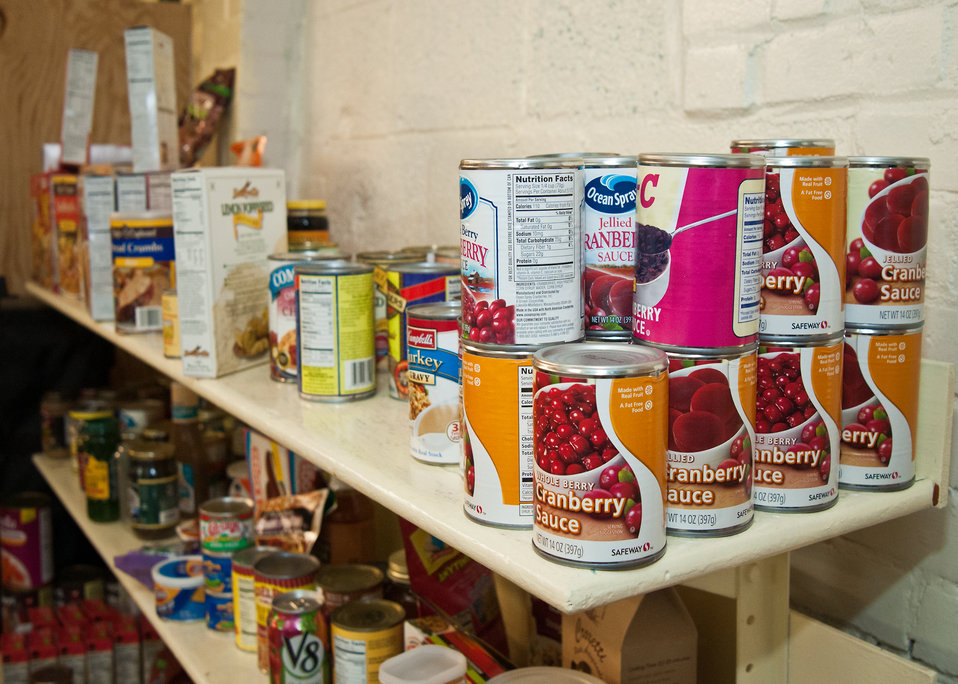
Fifty-five percent of the food distributed at the Arlington Food Assistance Center in Arlington, Virginia is donated food. So far in 2012, The AFAC has served an average of 1,500 families per week. Agriculture Secretary Tom Vilsack designated January 12, 2012 as the first United States Department of Agriculture Martin Luther King Day of Service to recognize Dr. King’s contributions to the Civil Rights Movement. The volunteer service involved USDA nutrition programs.